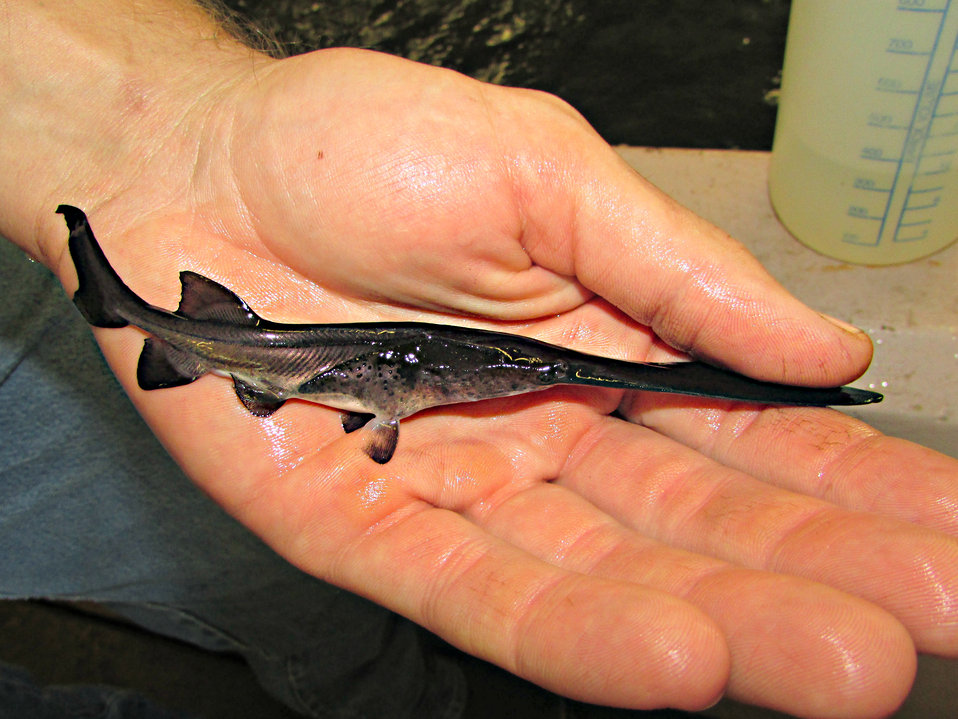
60 Days old

Our paddlefish are approaching the 60 day mark! Today and tomorrow they are receiving coded wire tags so that we can identify them in the wild. In about a month they will be released into Lake Francis Case.